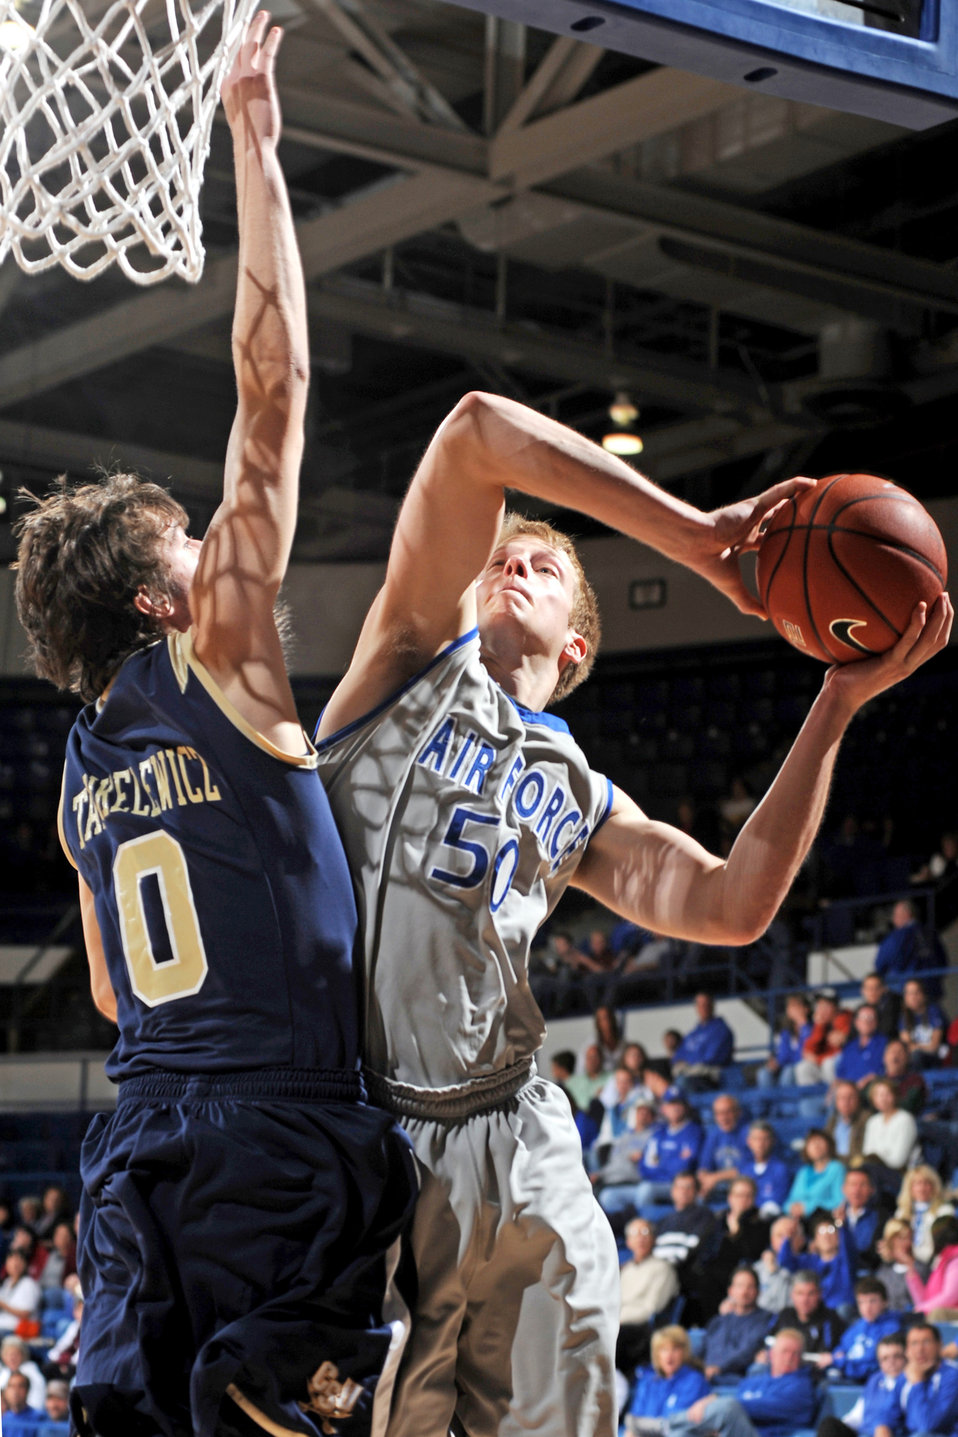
Air Force Academy

Falcons senior forward Grant Parker goes up for a two-pointer in the Air Force-Charleston Southern match Nov. 28, 2009. Air Force won 68-58 in the non-conference match. Parker scored 25 points and grabbed a career-high 11 rebounds as the Falcons improved to 3-1 on the season.